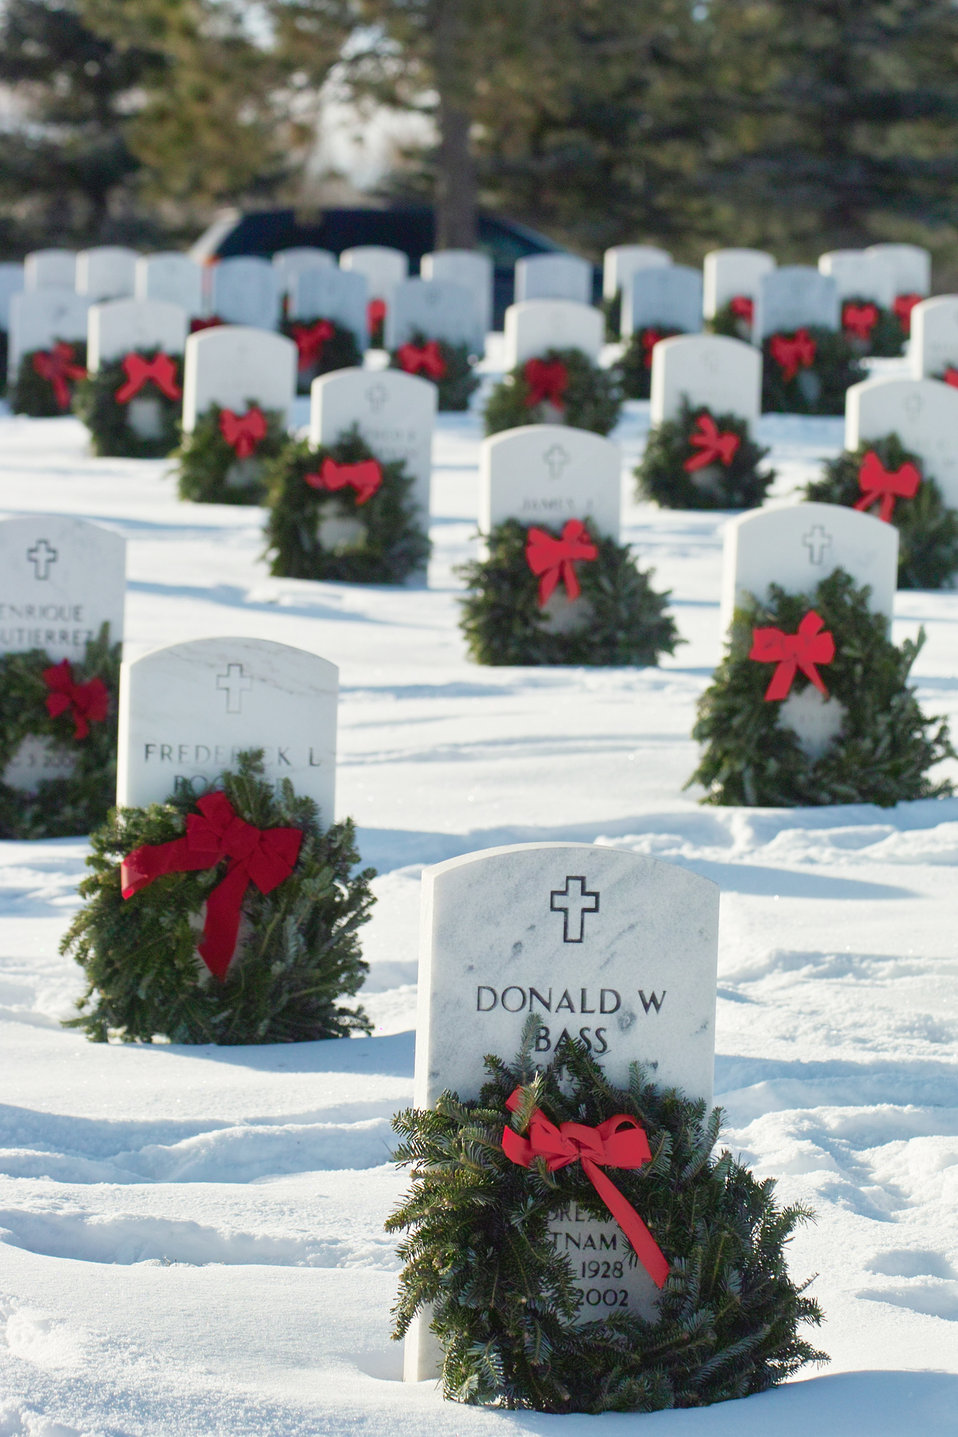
Volunteers honor veterans with wreaths

Wreaths adorn the graves of veterans during Wreaths Across America at Fort Logan National Cemetery in Littleton, Colo. Dec. 14, 2009. Eighty-seven volunteers from Buckley Air Force Base joined Civil Air Patrol members and volunteers from Schriever and Peterson air force bases and the Denver Metropolitan Area for a day of remembrance.